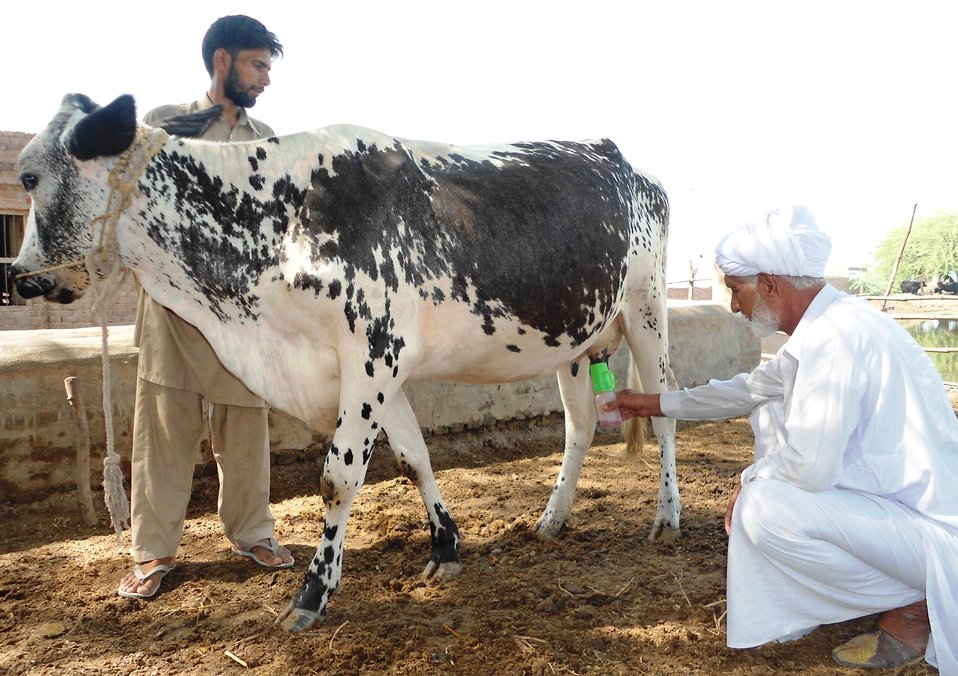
Mushtaq Ahmad practicing teat dipping